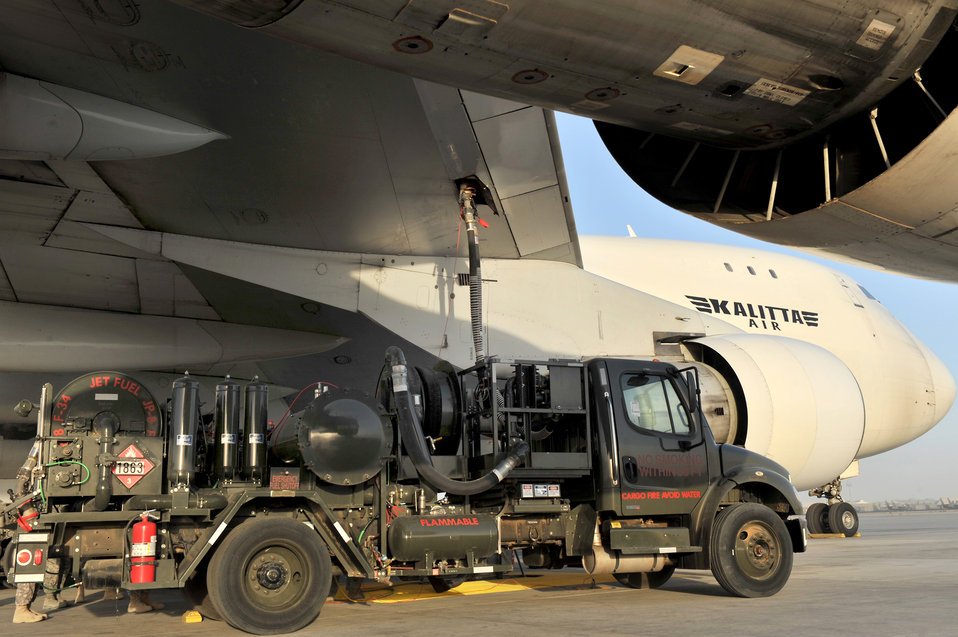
New fuel system enhances Bagram's refueling capabilities

Tech. Sgt. Jeremy Whitworth supervises a cargo aircraft refueling with the new R-12 hydrant servicing vehicle Dec. 21, 2010, at Bagram Airfield, Afghanistan. Sergeant Whitworth is the 455th Expeditionary Logistics Readiness Squadron chief of refueling.